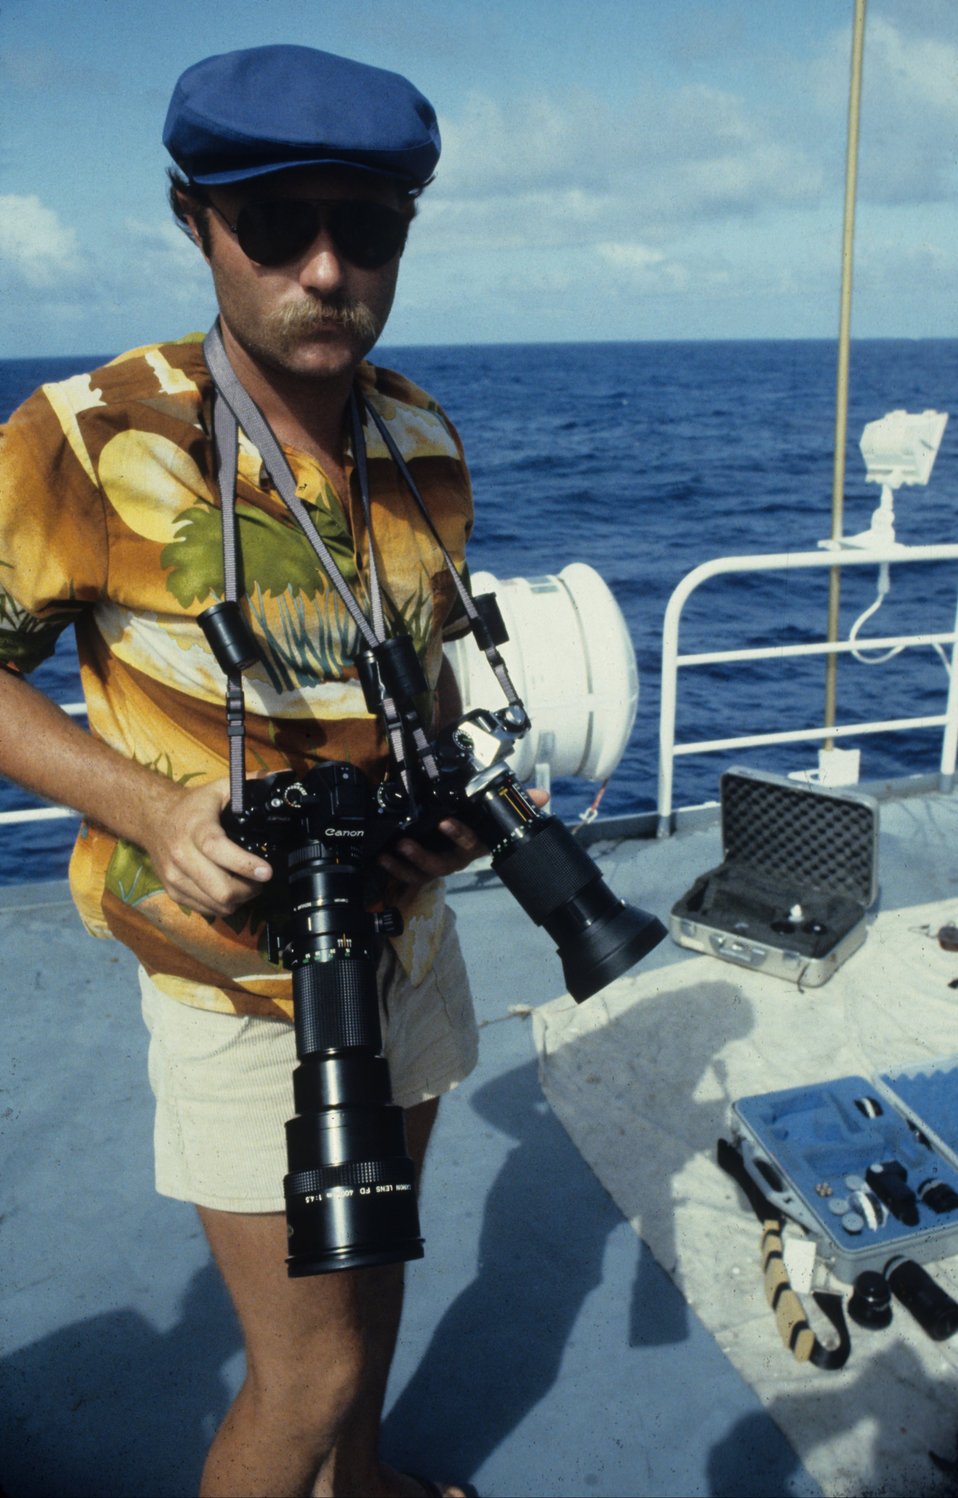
A wildlife photographer .